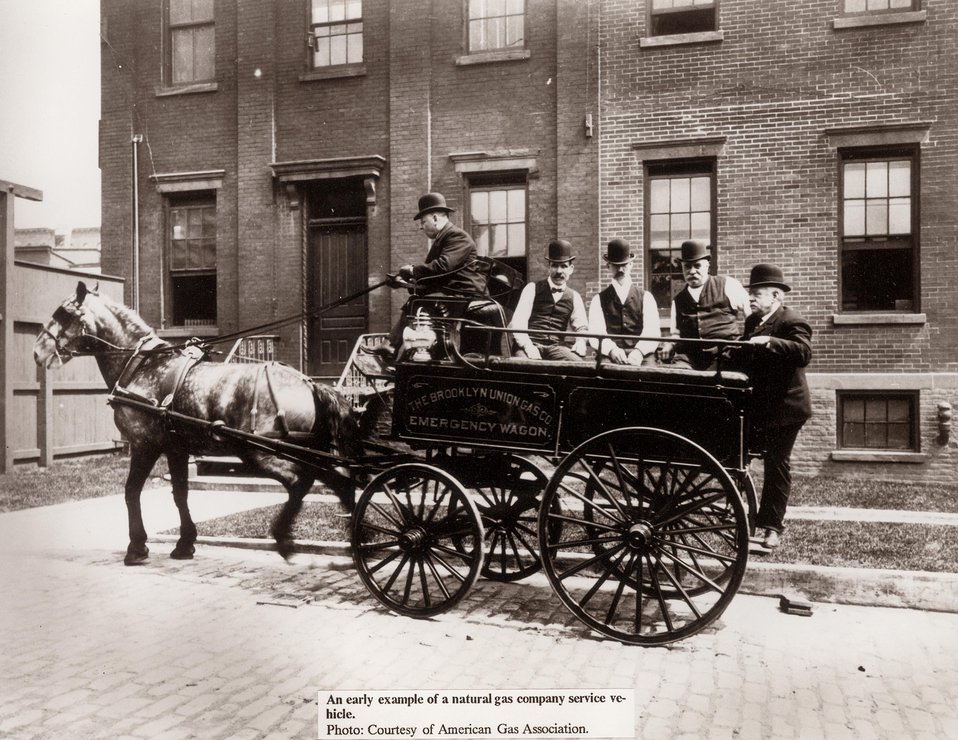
An early example of a natural gas company service vehicle.